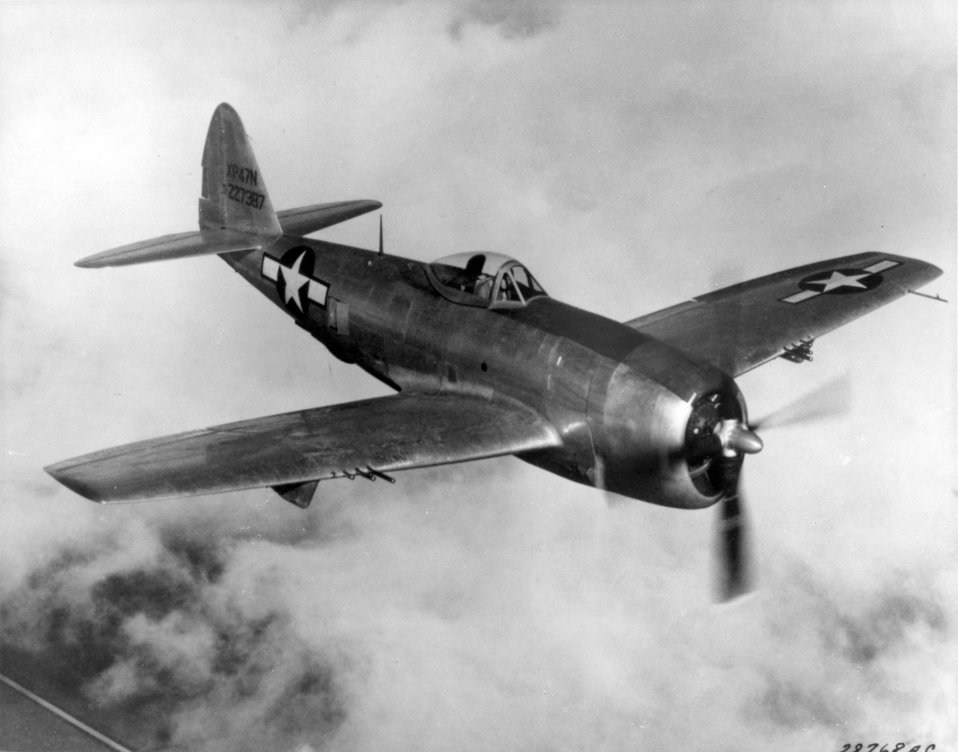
Republic P-47N Thunderbolt

1940's -- Republic P-47N Thunderbolt, Thunderbolt flies its first combat mission--a sweep over Western Europe. Used as both a high-altitude escort fighter and a low-level fighter-bomber, the P-47 quickly gained a reputation for ruggedness. Its sturdy construction and air-cooled radial engine enabled the Thunderbolt to absorb severe battle damage and keep flying.